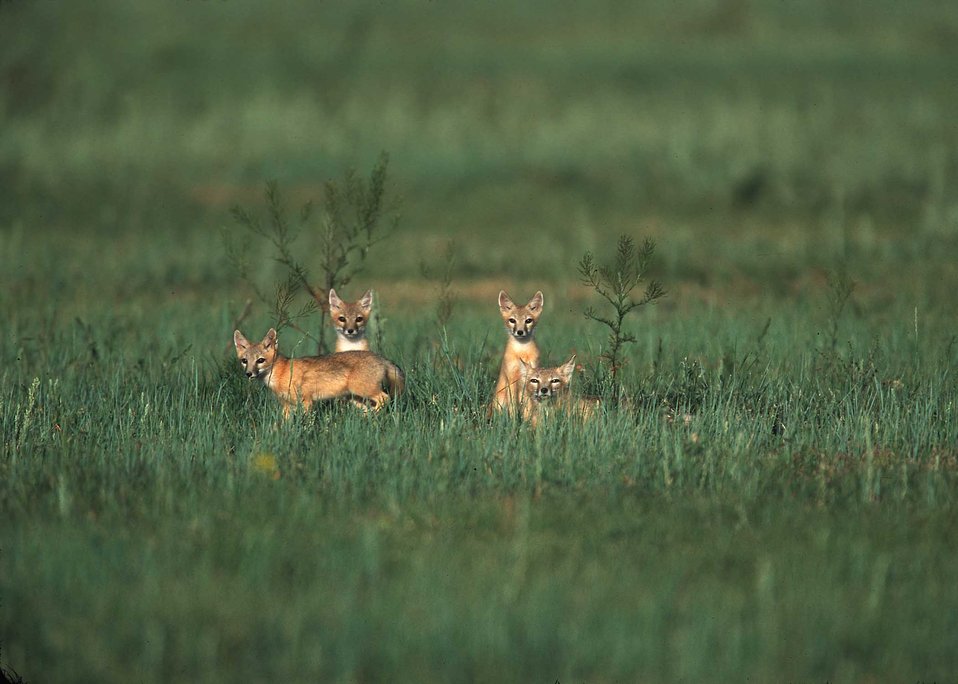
Swift Fox on Pawnee Grassland.